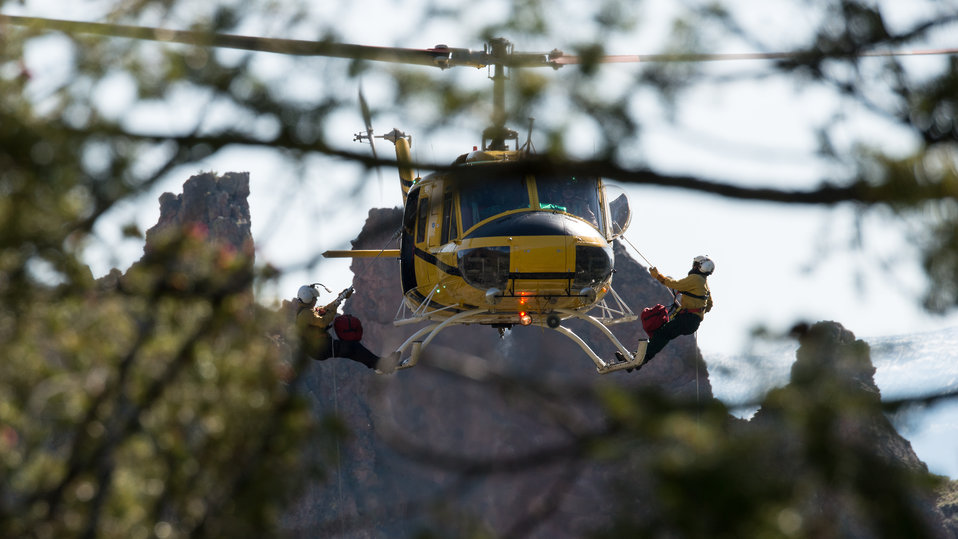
An Express's Bell 205A-1 Helicopter maintains altitude and position, both critical, for veteran wildland firefighter rappellers to descend to a landing zone in the Perreau Creek area, during the U.S. Department of Agriculture (USDA), U.S. Forest Service (USFS) National Helicopter Rappel Program’s Rappel Academy at Salmon Air Base, in Salmon, Idaho, on Thursday, May 15, 2014.